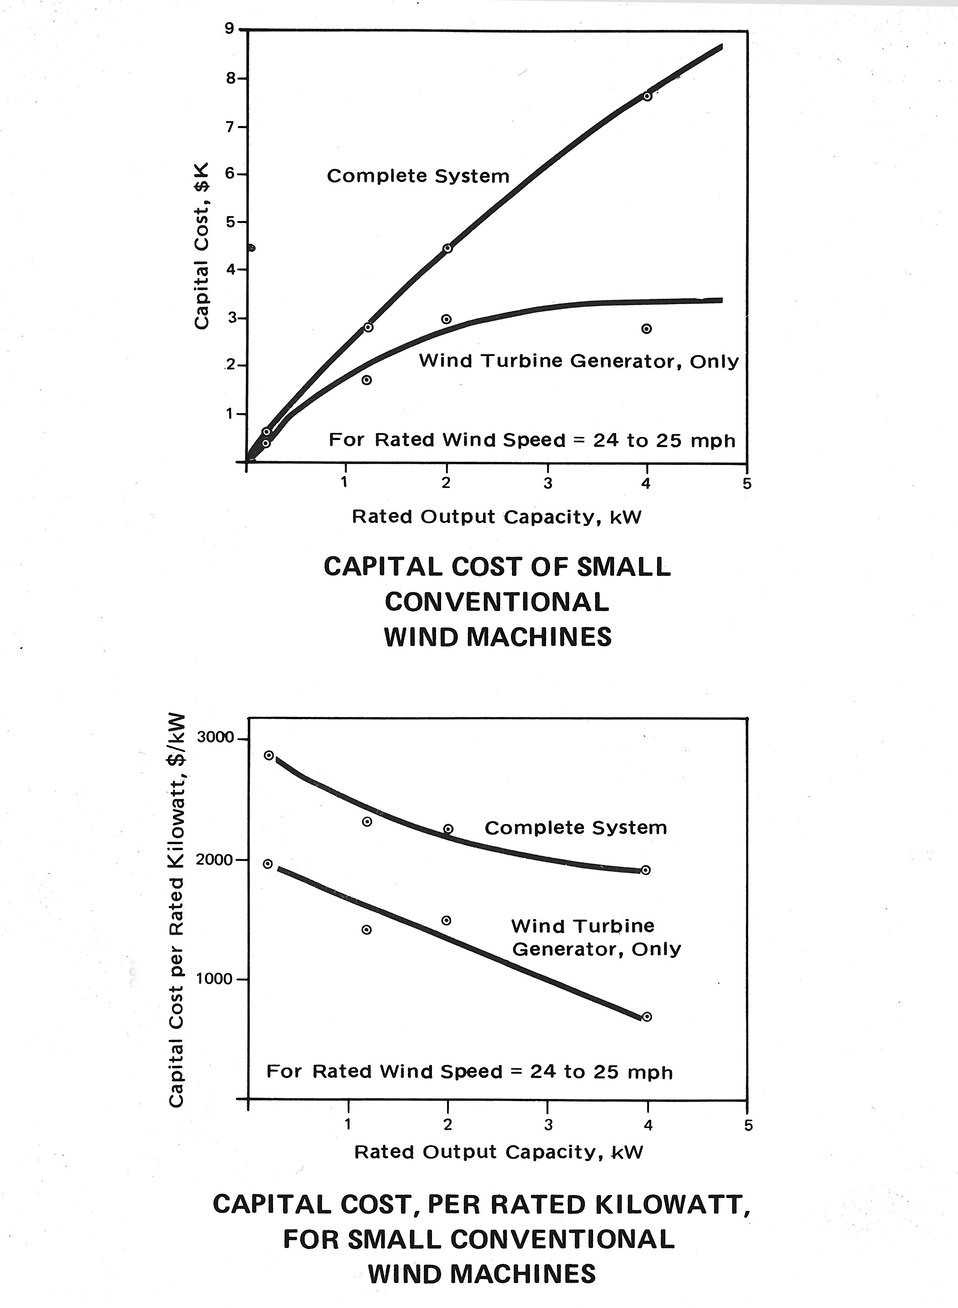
These graphs describe the economics of small wind energy conversion systems, in which the rated output capacity ranges from one to five kilowatts. c. 1977